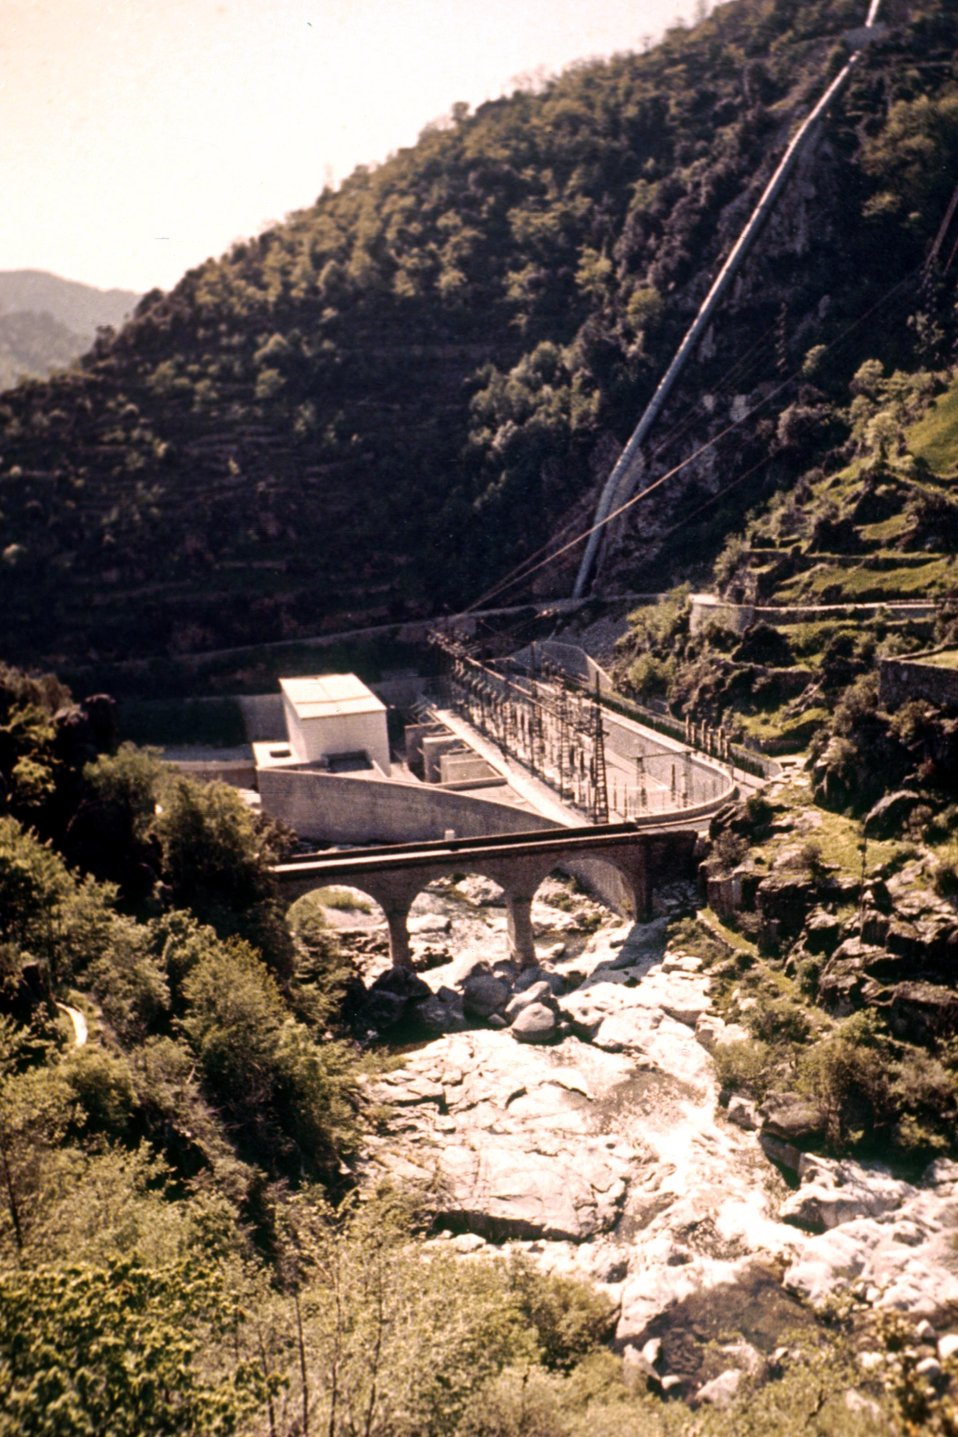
Une centrale hydraulique.